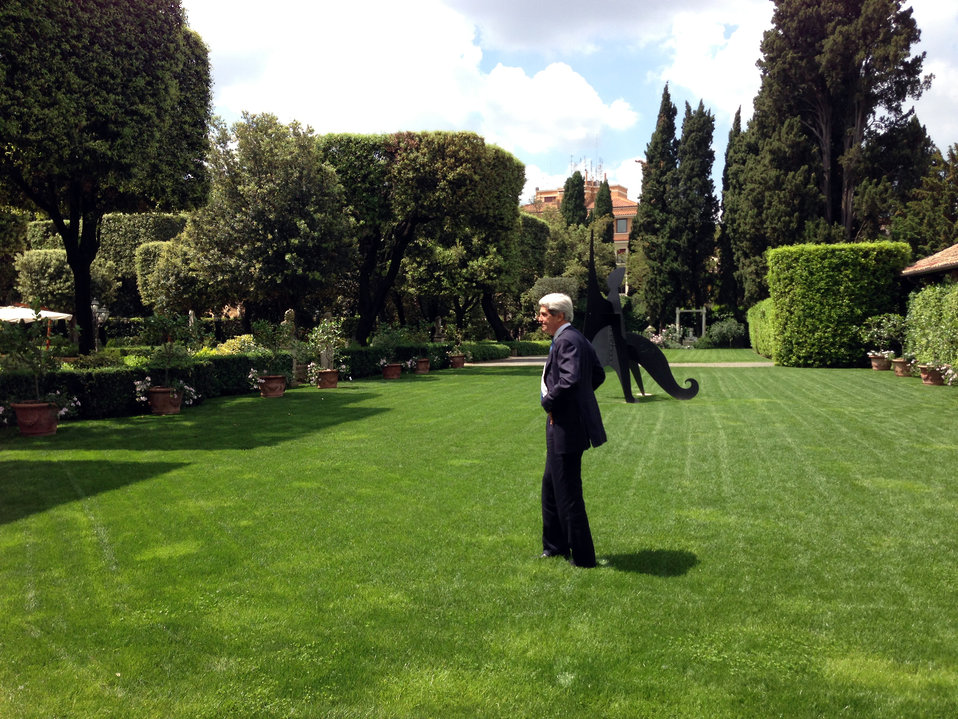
Secretary Kerry Enjoys a Moment of Solitude

U.S. Secretary of State John Kerry enjoys a moment of solitude after arriving at the U.S. ambassador's residence, the Villa Taverna, in Rome, Italy, before meeting with Israeli Justice Minister Tzipi Livni on May 8, 2013.